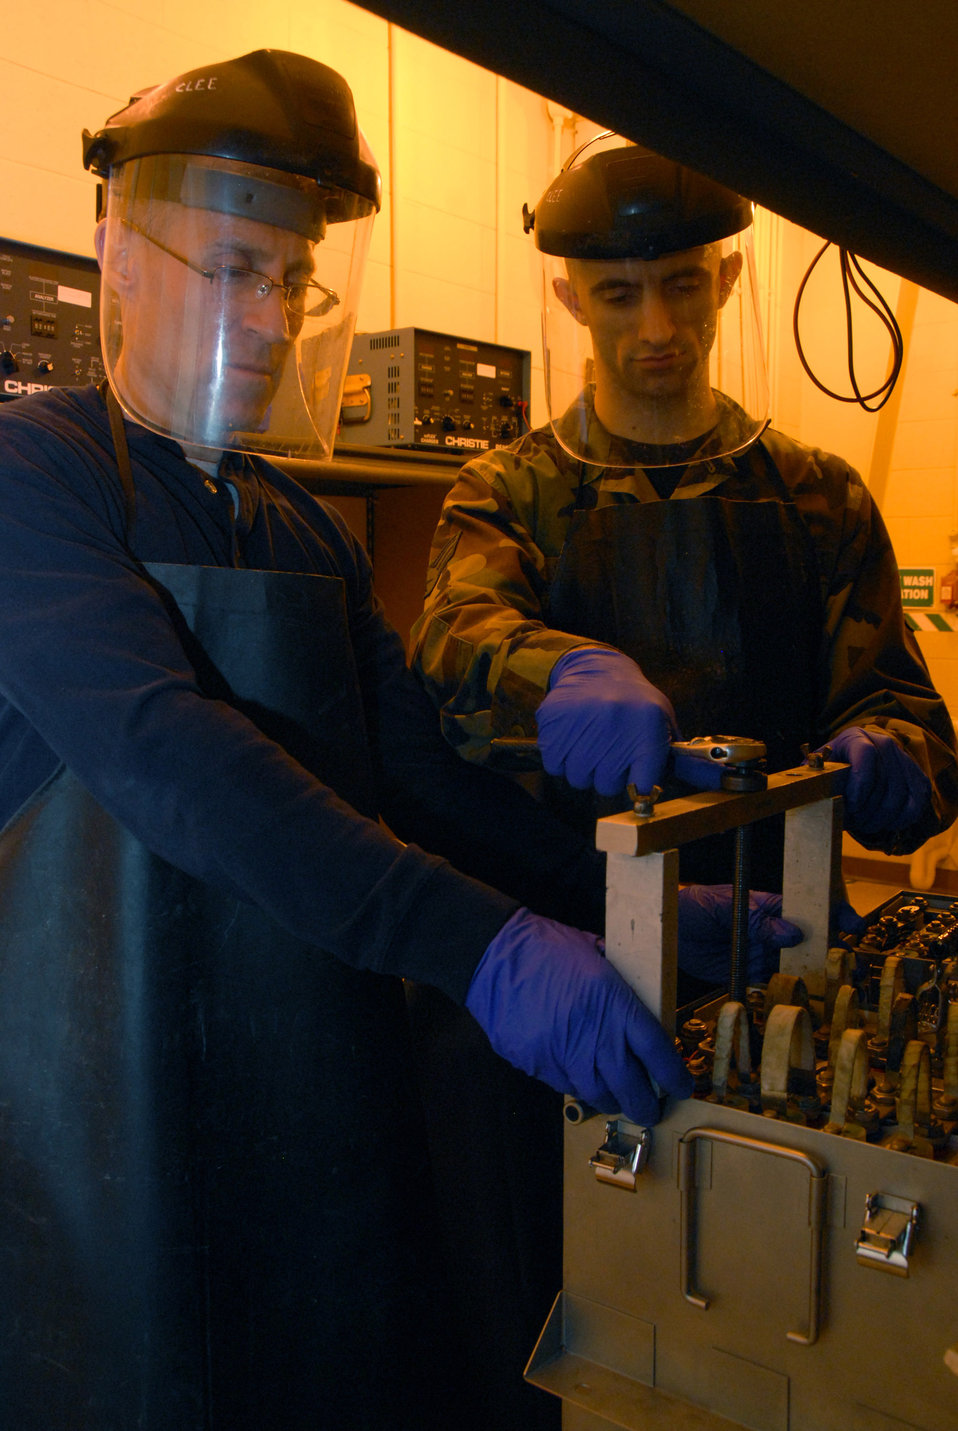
Life-risking Airmen save mission, assets

Master Sgt. Michael Bunting and Senior Airman David Stricker work together on removing a cell from an aircraft battery at the 437th Maintenance Squadron electrical and environmental battery shop Feb. 11. The shop is responsible for maintaining all the C-17 Globemaster III batteries for Charleston Air Force Base, S.C. Sergeant Bunting is an electrical and environmental systems craftsman for the 315th Maintenance Squadron and Airman Stricker is an electrical and environmental systems journeyman for the 437th MXS.